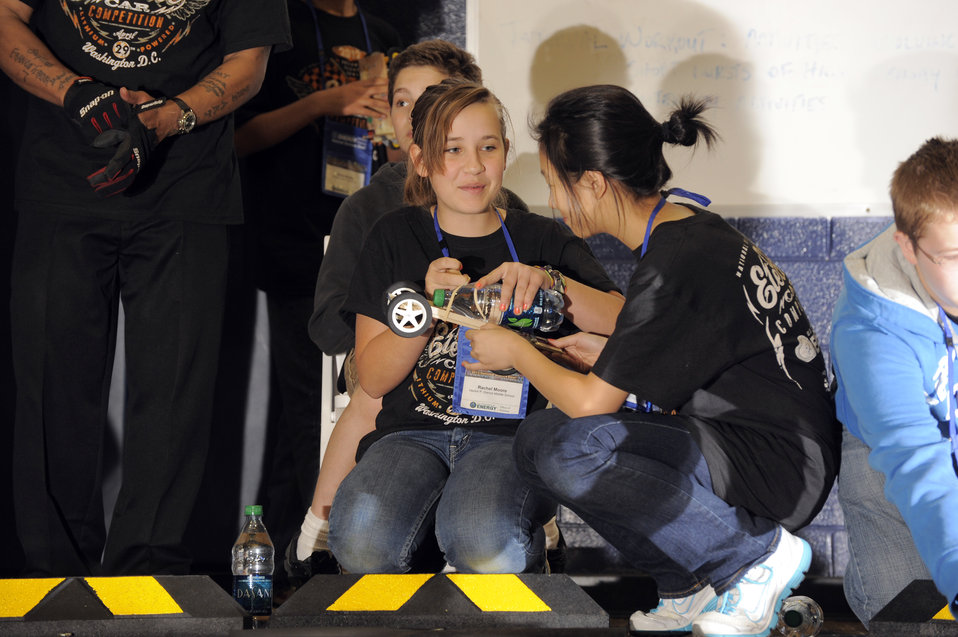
Team Hector Garcia Middle School in San Antonio, Texas, competes at the Lithium-Ion Battery Powered Model Car Challenge during the 2012 National Science Bowl in Washington, DC on April 29, 2012.